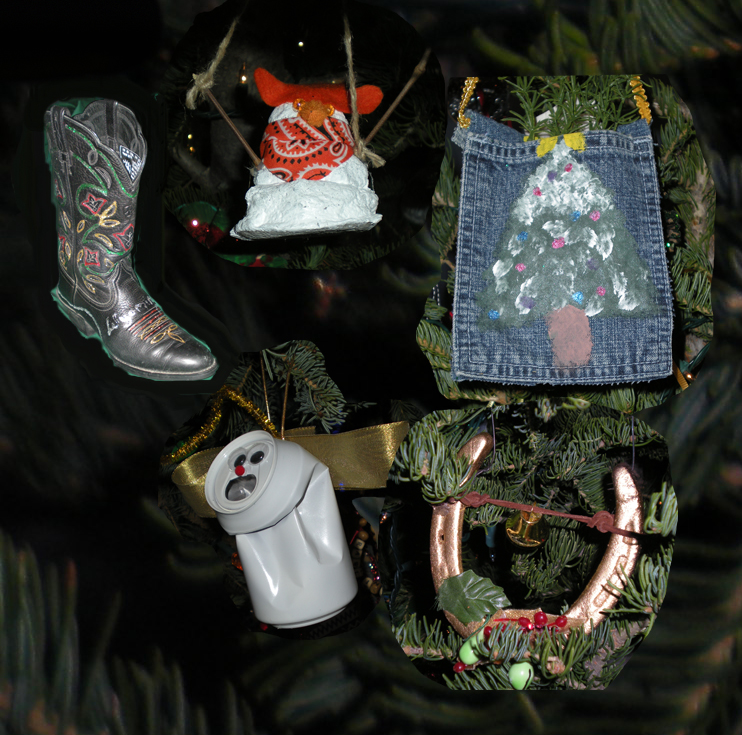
Ornaments2

These ornaments exemplify the recycled nature of ornaments submitted by Wyoming residents for this year's trees, including a horse shoe, blue jeans pocket, a crushed can angel, and a snow man made from recycled drywall plaster.